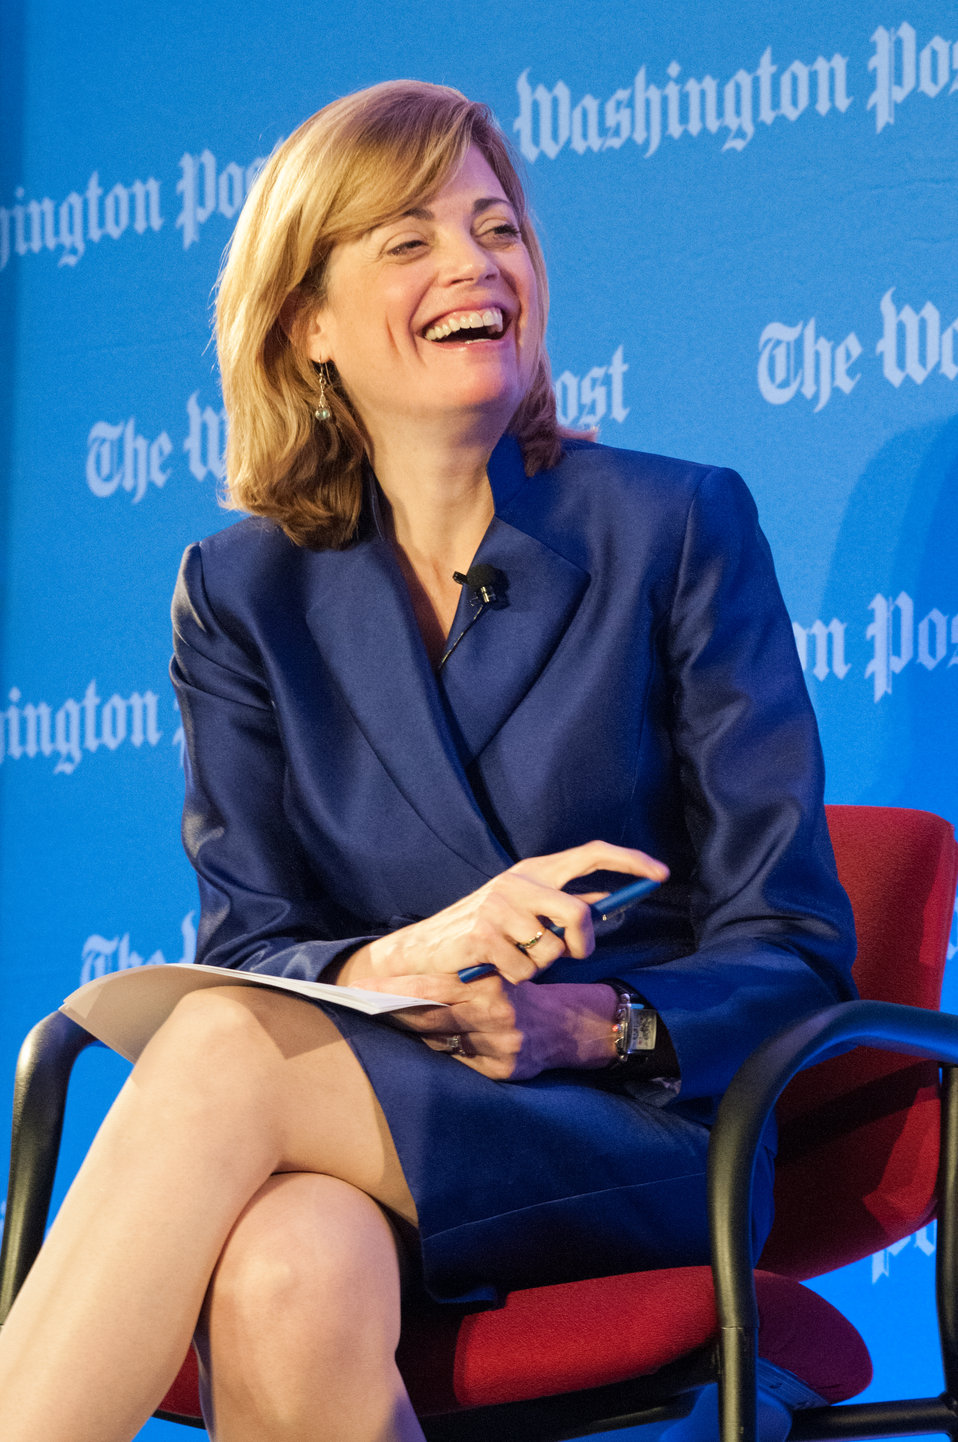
Washington Post Live Editor and moderator Mary Jordan Live reacts to a response from a panel member at the annual live forum, “Future of Food: Building a Sustainable Food System 2013,” sponsored by the Washington Post in Washington, D.C. on Wednesday, May 22, 2013. Agriculture Secretary Tom Vilsack and leading agricultural, government and nutrition experts discussed expanding healthy, sustainable food systems, public-private partnerships, the market’s role in nutrition and the future of agricultural innovation.